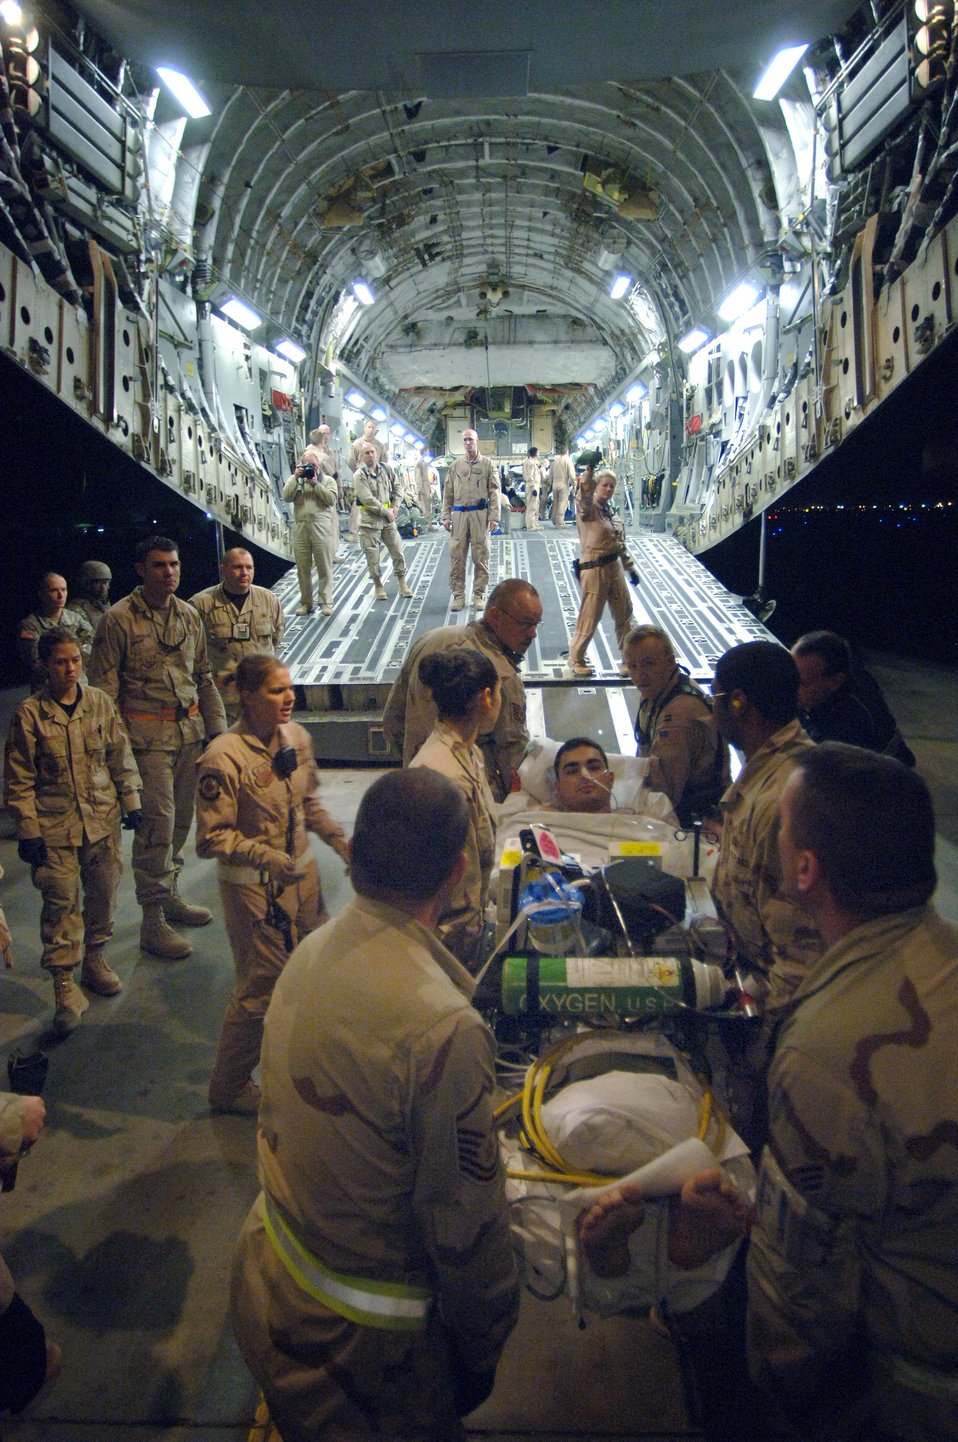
Staging facility prepares injured warfighters for flight

Airmen from the 332nd Medical Group Contingency Aeromedical Staging Facility and volunteers from all over the 332nd Air Expeditionary Wing load injured military members onto a C-17 Globemaster III Feb. 21 departing from Balad Air Base, Iraq, to Landstuhl, Germany, where they will receive further care for their wounds. The Contingency Aeromedical Staging Facility is a staging where patients are prepared for their flight out of Iraq.